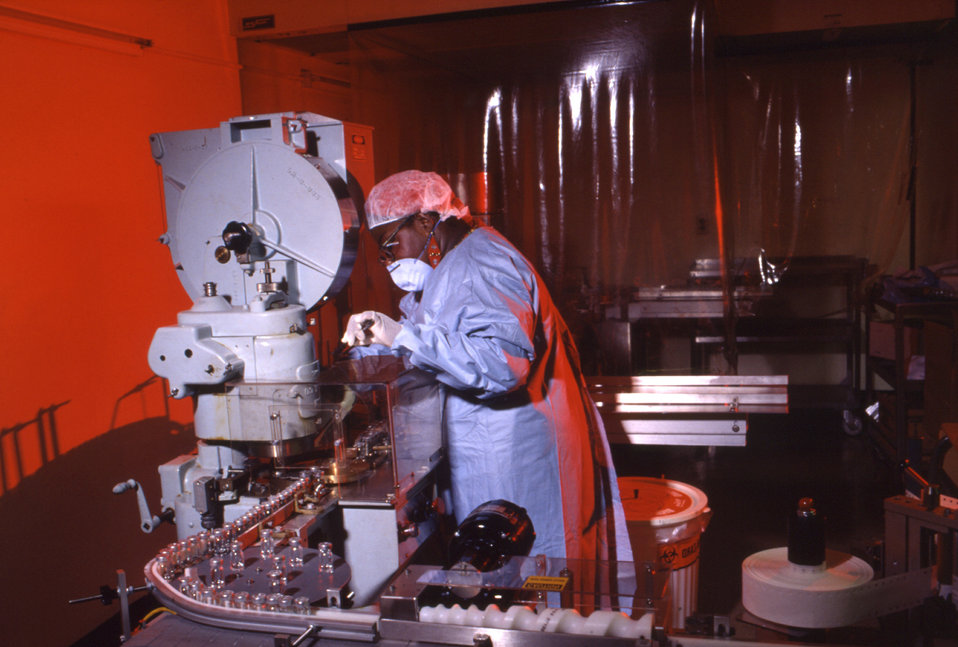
This is a photograph of a CDC laboratorian working with an earlier version of an automated vial capping system.